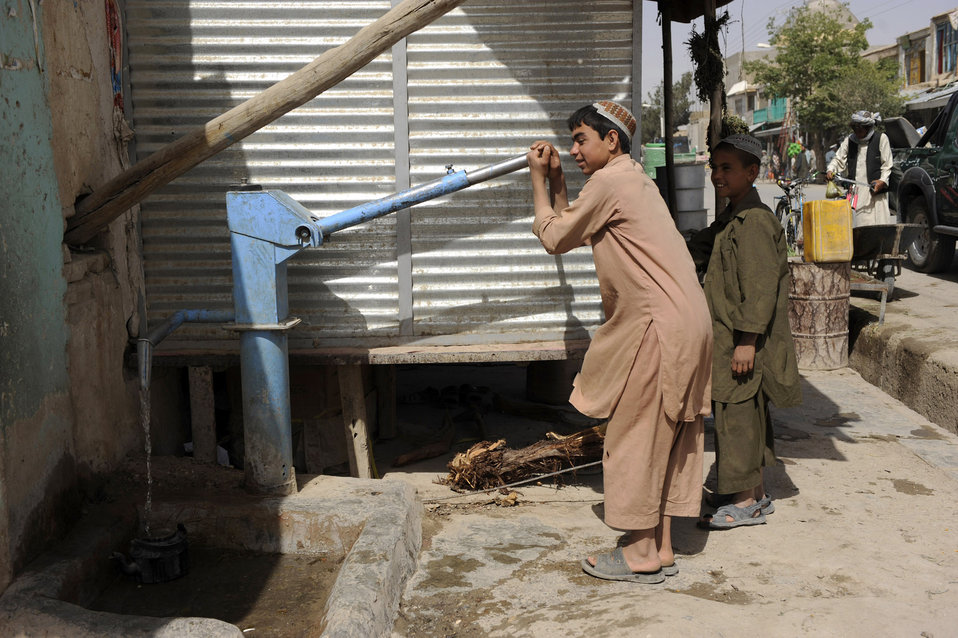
PRT Zabul completes projects for progress

Afghan boys pump water on a bazaar street during a foot patrol by Provincial Reconstruction Team Zabul Airmen and Soldiers May 23, 2010, in Qalat City, Afghanistan. PRT Airmen help facilitate projects like Clean Water, a program that provides Afghan families with chlorine to kill bacteria in local water.